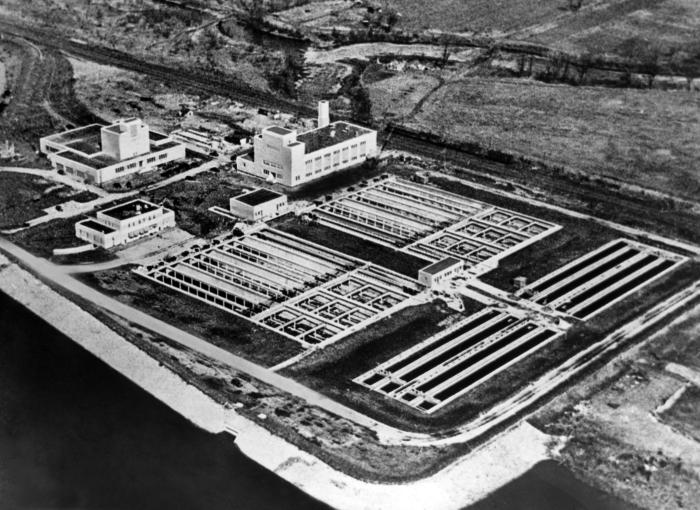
This historic 1939 photograph depicted an aerial view of what at that time was a 'modern' sewage disposal plant located in the Minneapolis-St. Paul Sanitary District on Pig's Eye Island, St. Paul, Minnesota.